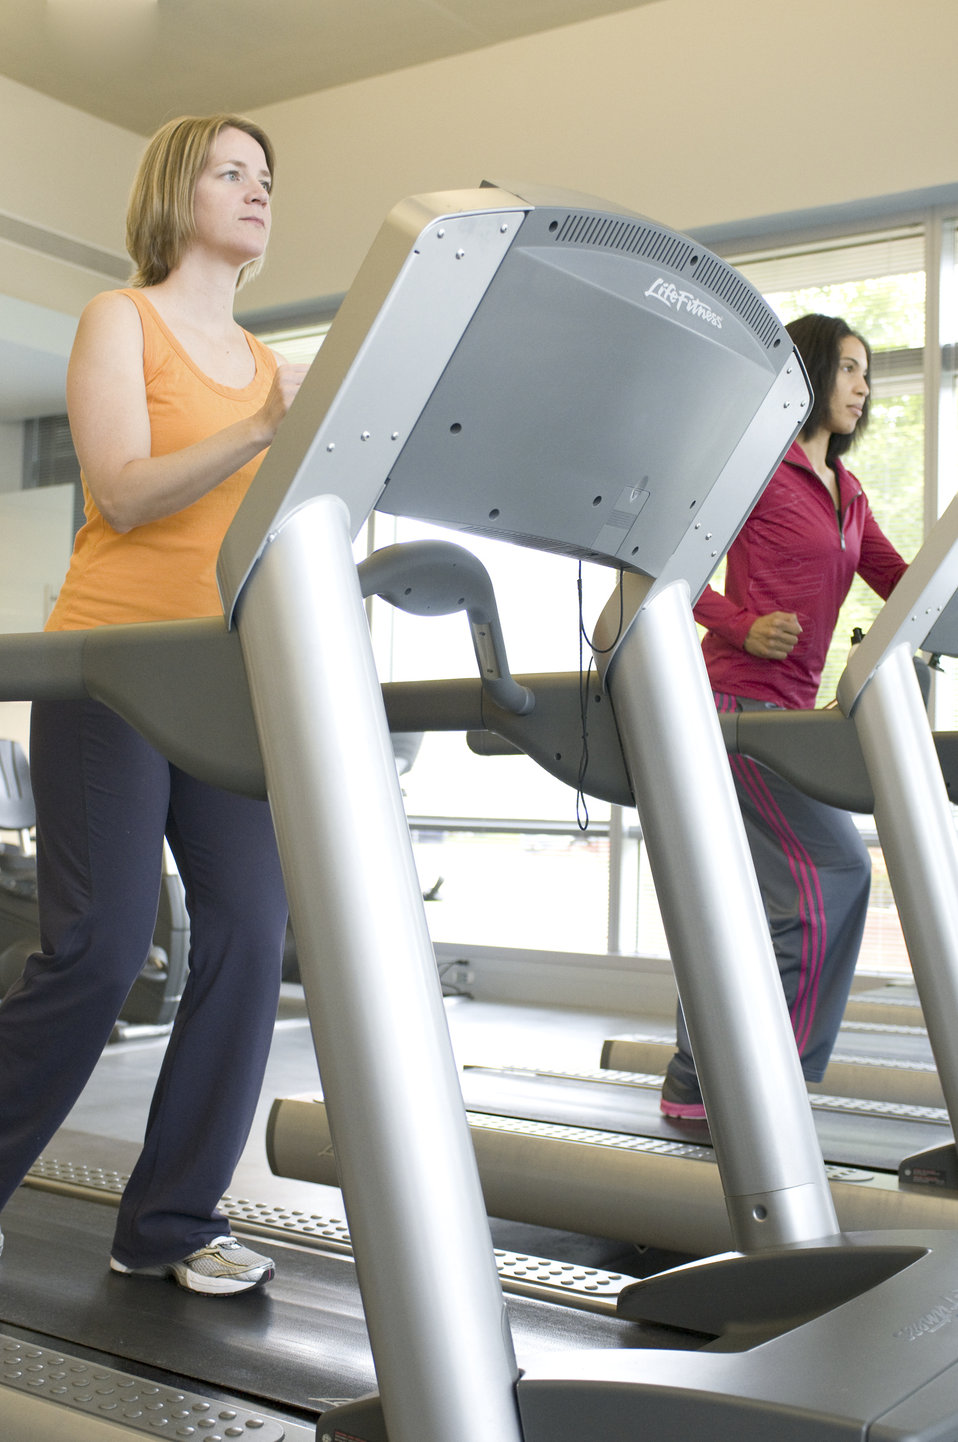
This image was captured on one of the Centers for Disease Control's (CDC) campuses, in the facility's fitness center, where a number of scheduled group classes are provided for employees' health and enjoyment. In this particular view, two women were making use of the facility's treadmills, taking part in some aerobic exercise.